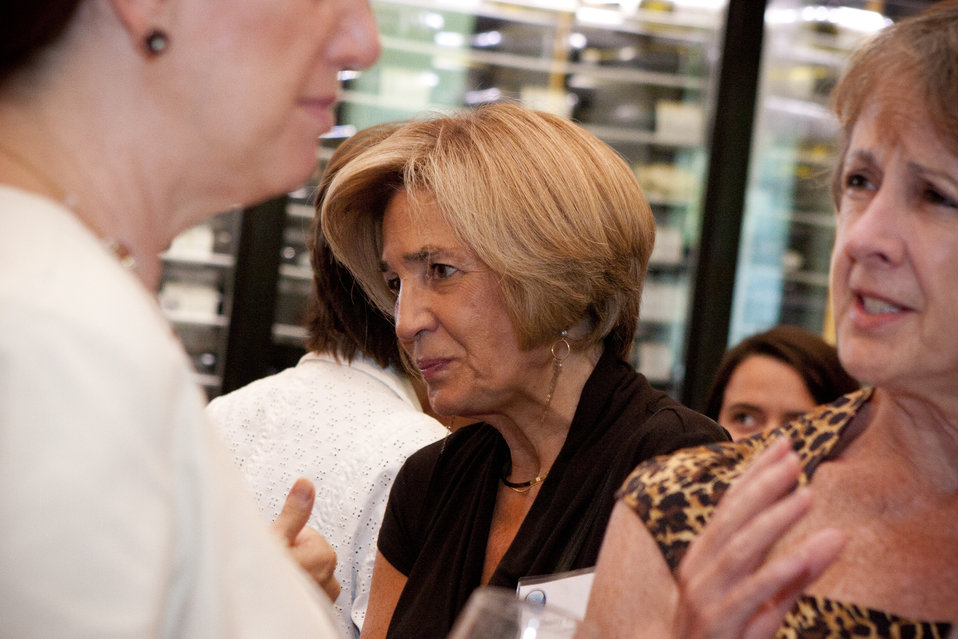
WomenandEnergy 26